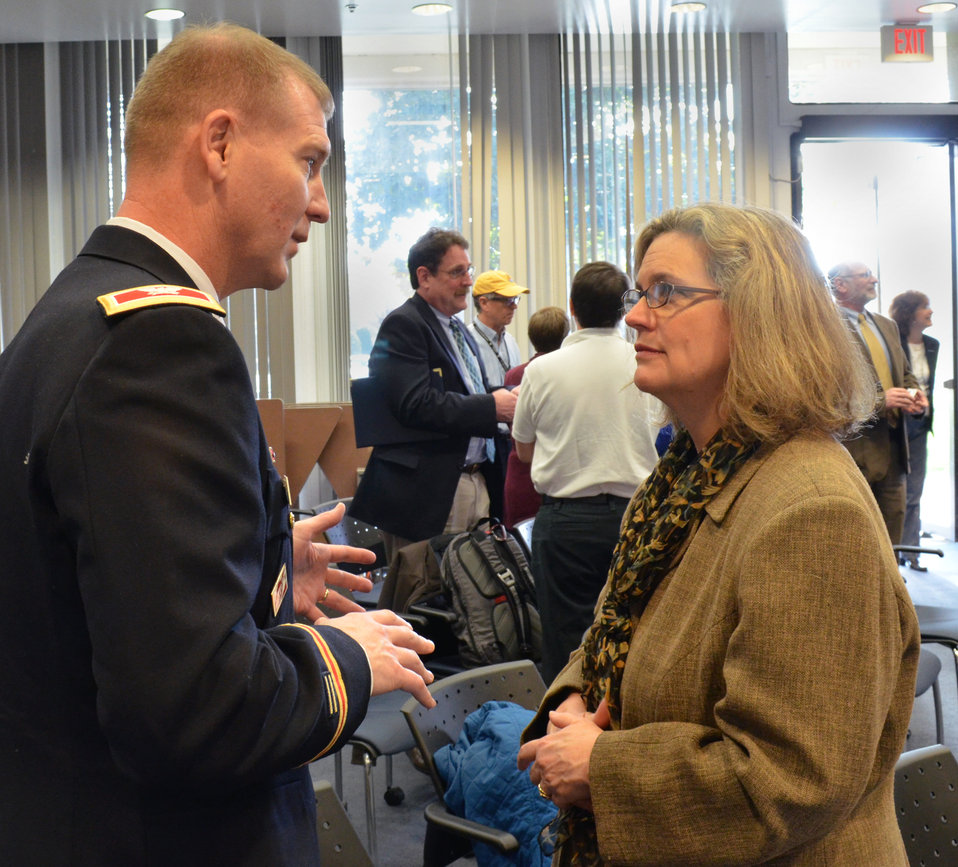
California drought press briefing, Feb. 5, 2014

Colonel Mike Farrell, commander of the U.S. Army Corps of Engineers Sacramento District, speaks with Maria Rea, assistant regional administrator, National Marine Fisheries Service during a Feb. 5 press event highlighting the united efforts by state and federal agencies to address California’s drought.